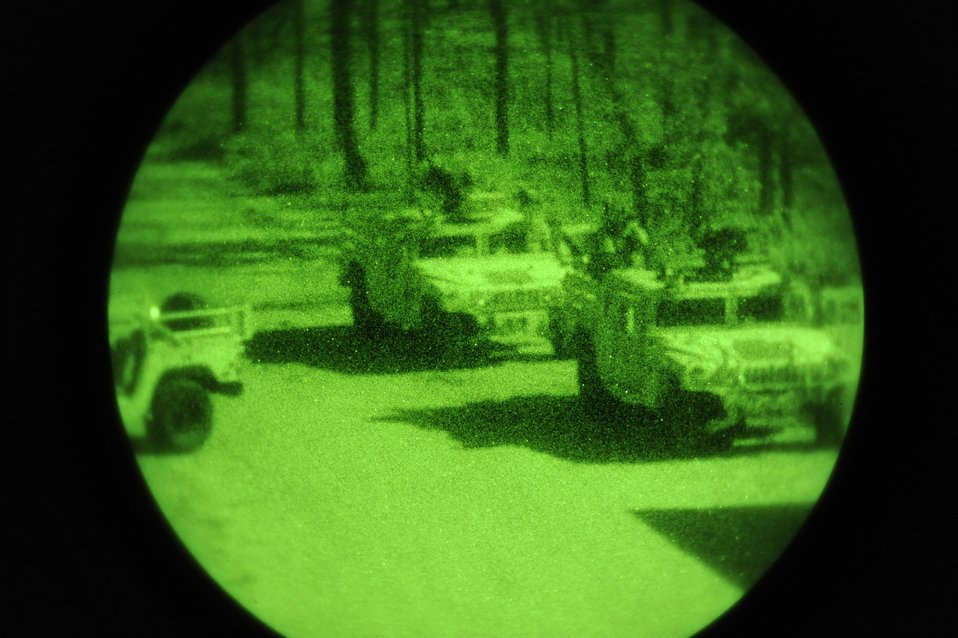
Emerald Warrior

A military quick reaction force arrives in HUMMVEEs Feb. 9 to engage